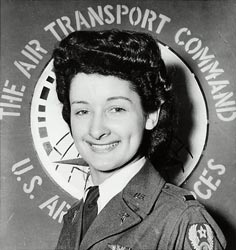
Captain Lillian Kinkella Keil

1950's -- In 1938, Lillian Kinkella Keil's mother thought her daughter might like to be one of a brand new group of women, called